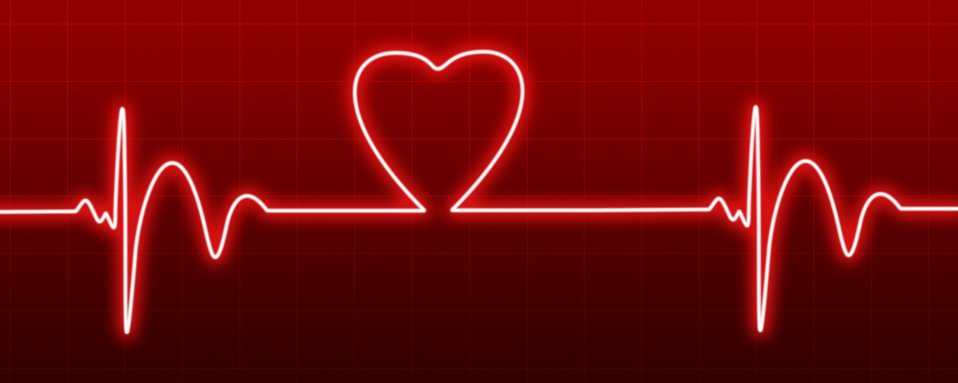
Heartbeat

The beat of a heart in love..